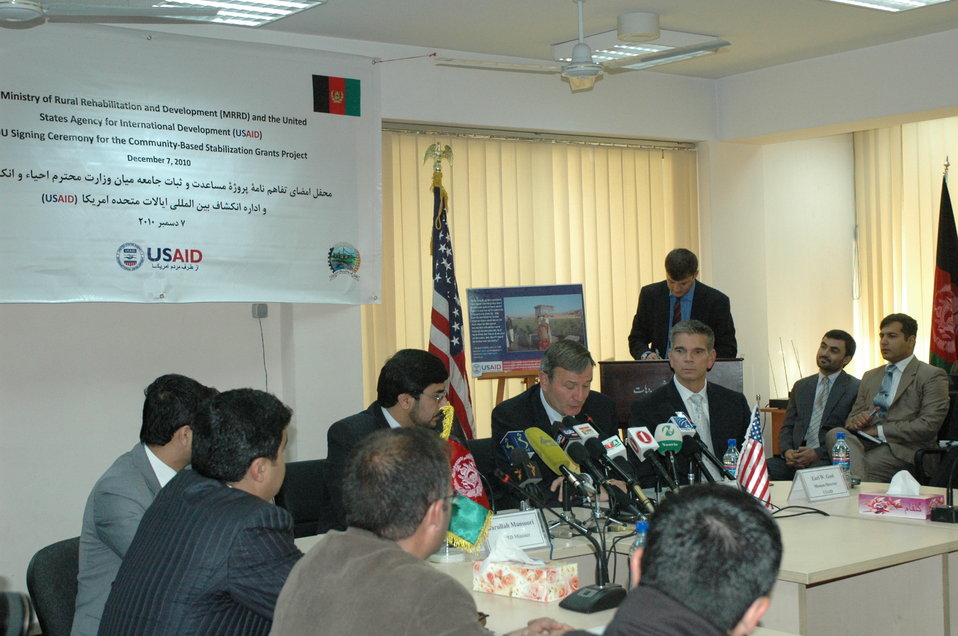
Community Based Stabilization Grants Ceremony, December 7, 2010